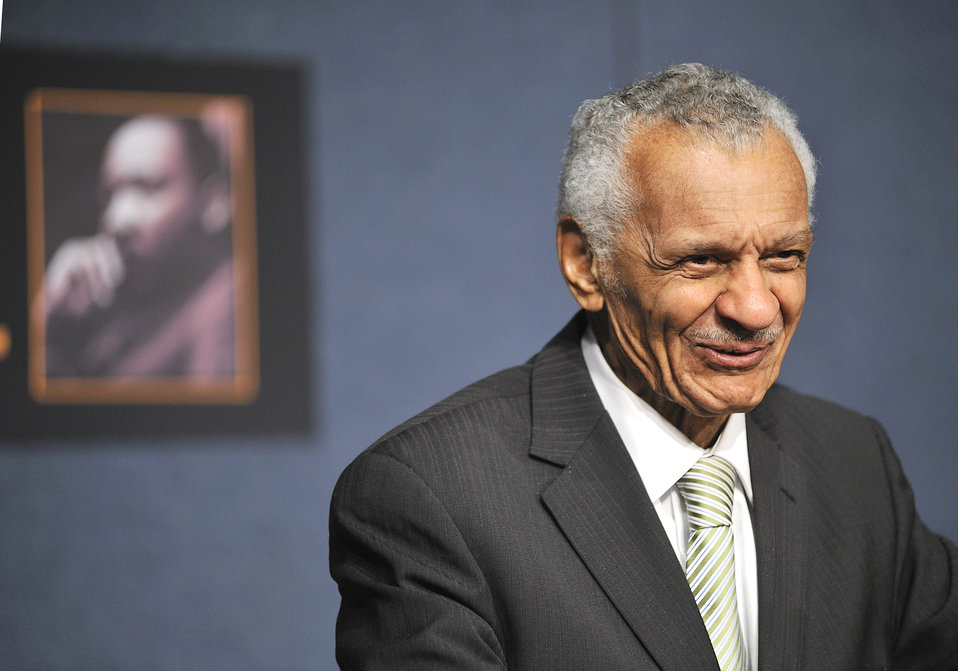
Martin Luther King Jr. Day Celebration at DOE headquarters.